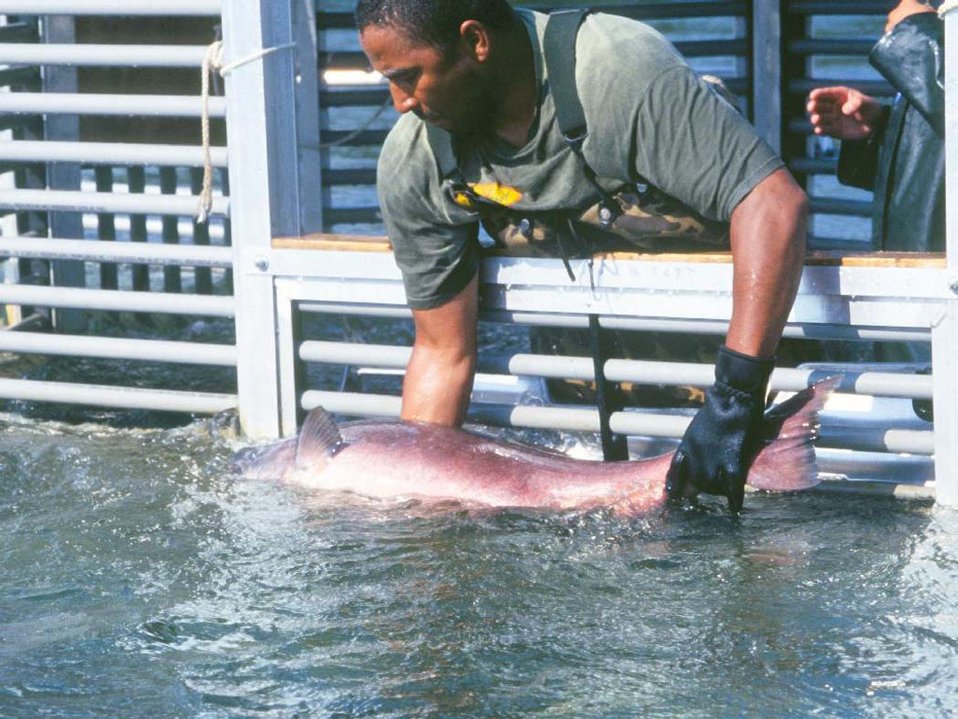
Salmon Release

Chinook salmon being released.